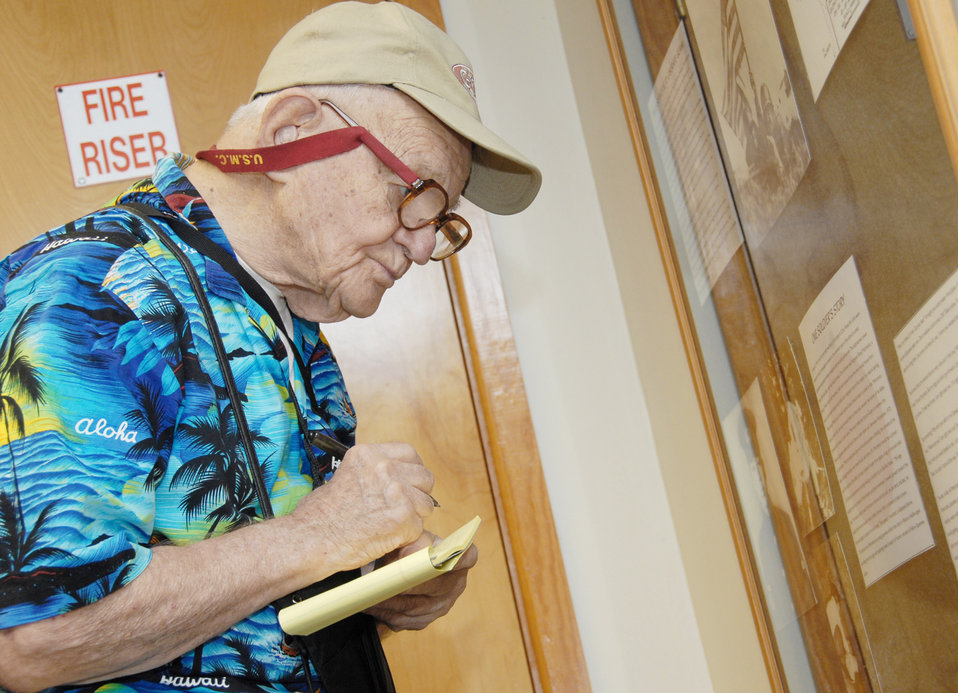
Veterans visit Iwo Jima memorial

Cyril O'Brian takes notes during a visit to the Heritage Museum March 1, 2010, at Andersen Air Force Base Guam. Mr. O'Brian was a combat correspondent on Iwo Jima and Guam during World War II and is touring the area during the 65th anniversary of Iwo Jima.